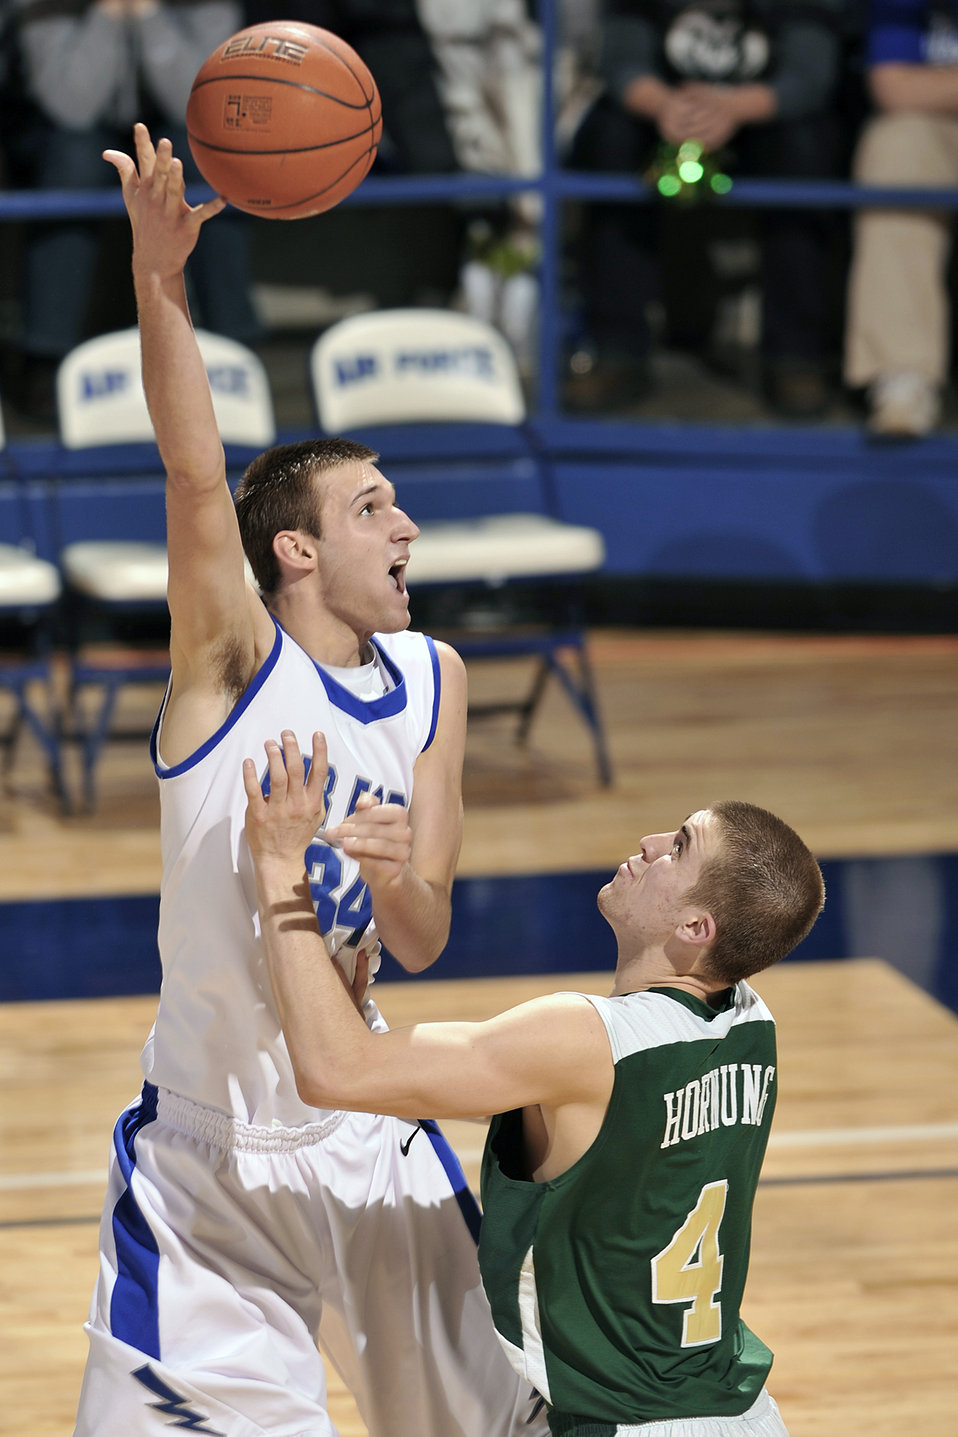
Colorado State beat Falcons

Falcon freshman Taylor Broekhuis lays up two points as Colorado State beat Air Force 51-47 in front of about 1,700 people at the Academy's Clune Arena Feb. 9, 2010. The Falcons are 9-14 overall and 1-9 in the Mountain West Conference.